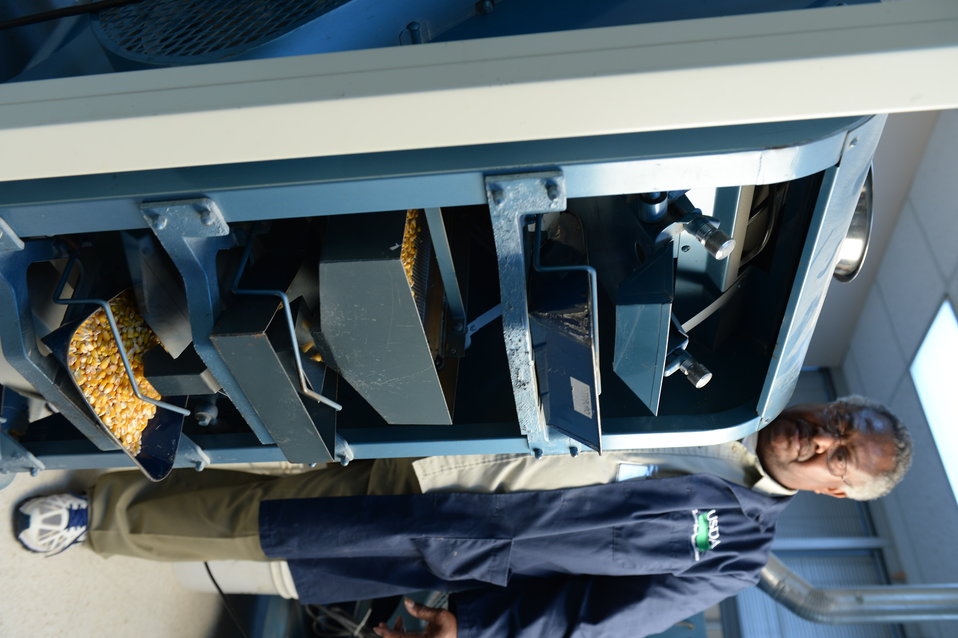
A U.S. Department of Agriculture (USDA) Grain Inspection, Packers and Stockyards Administration (GIPSA) Federal Grain Inspection Service (FGIS) scientist tests corn at the FGIS inspection laboratory in New Orleans, LA on Monday, Nov. 18, 2013.